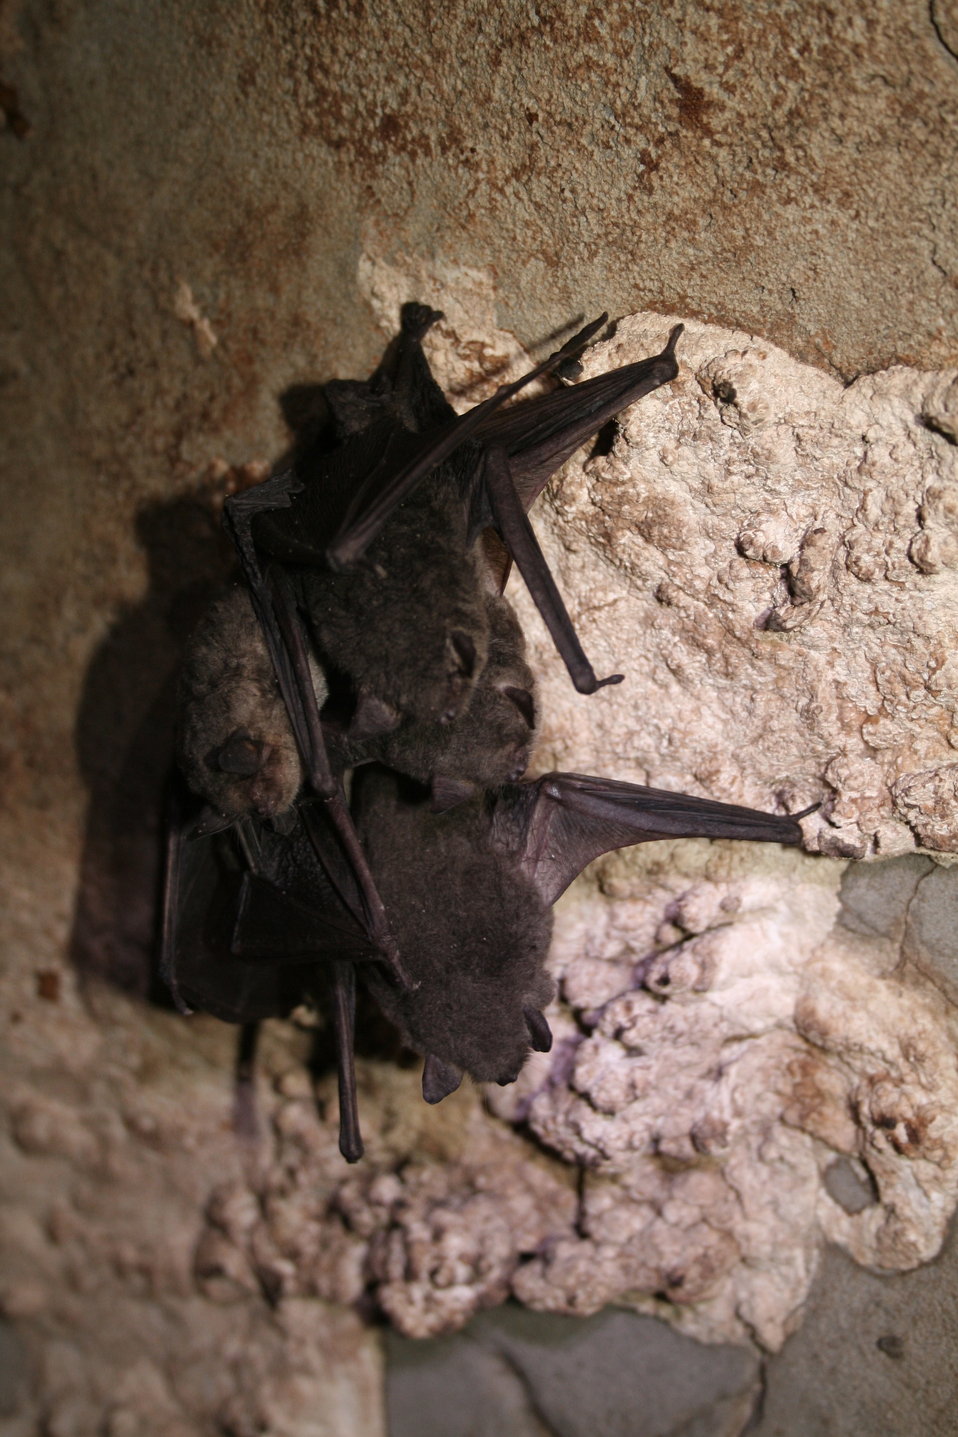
Cluster of gray bats

Cluster of hibernating gray bats (Myotis grisescens)